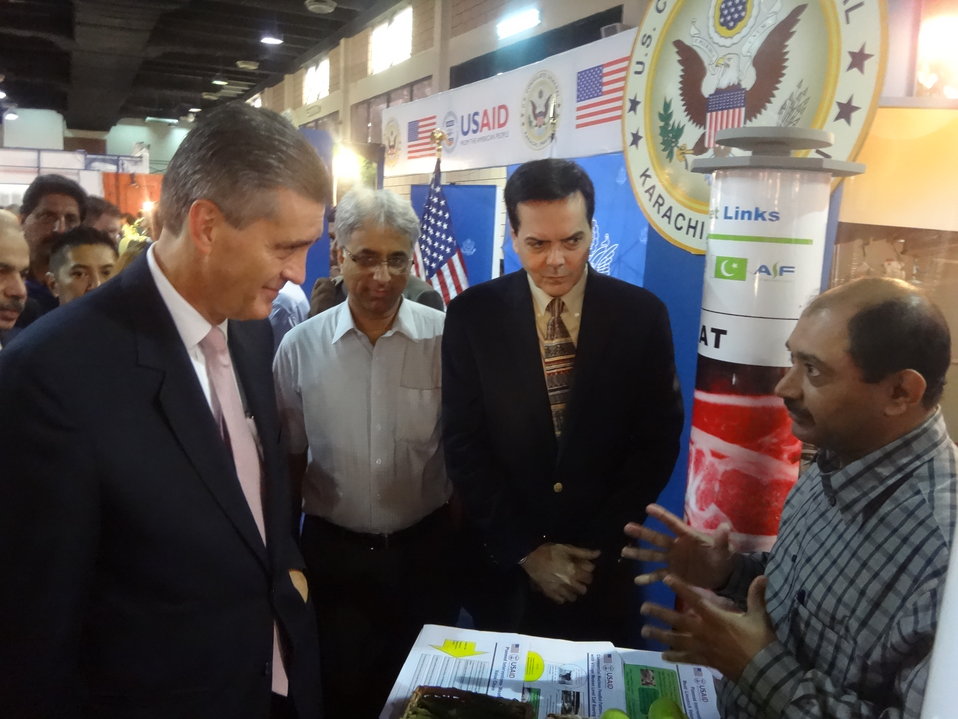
US Ambassador's visit to The Agribusiness Project at TDAP Expo, Karachi, September 27, 2013 (7)